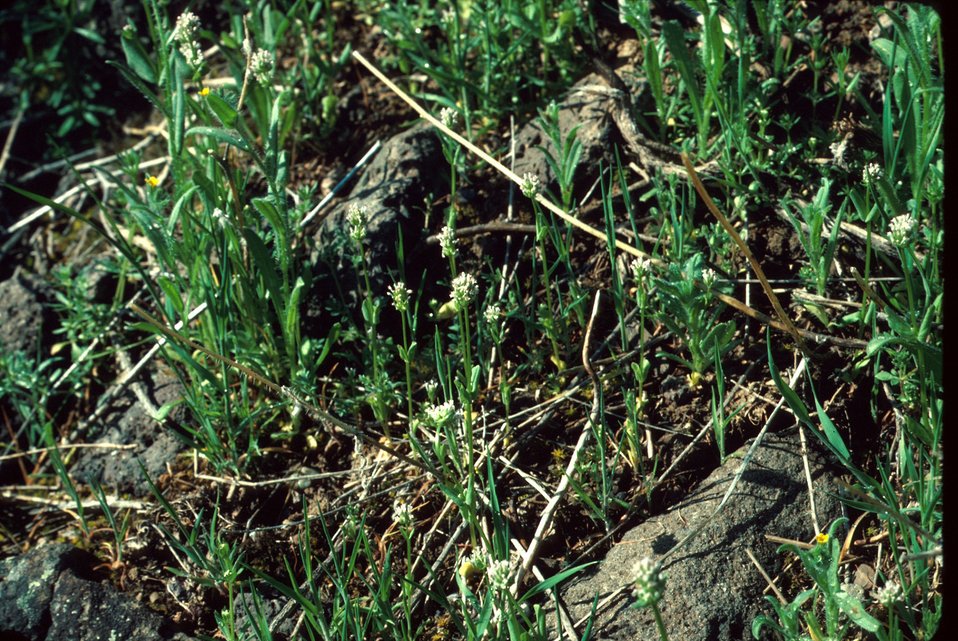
Plectritis macrocera Wildflower